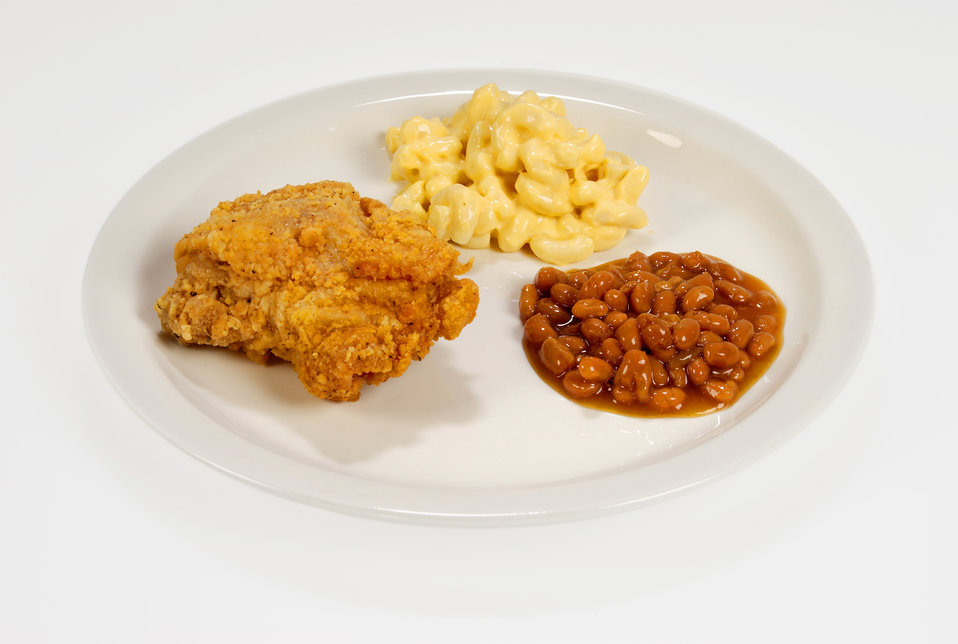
This white ceramic plate had been topped with some rather high caloric foods including a fried chicken breast, a serving of macaroni and cheese, and a serving of baked beans. This meal measured 607 calories in its entirety. Compare this to a lower calorie, healthier meal choice in PHIL 15030.